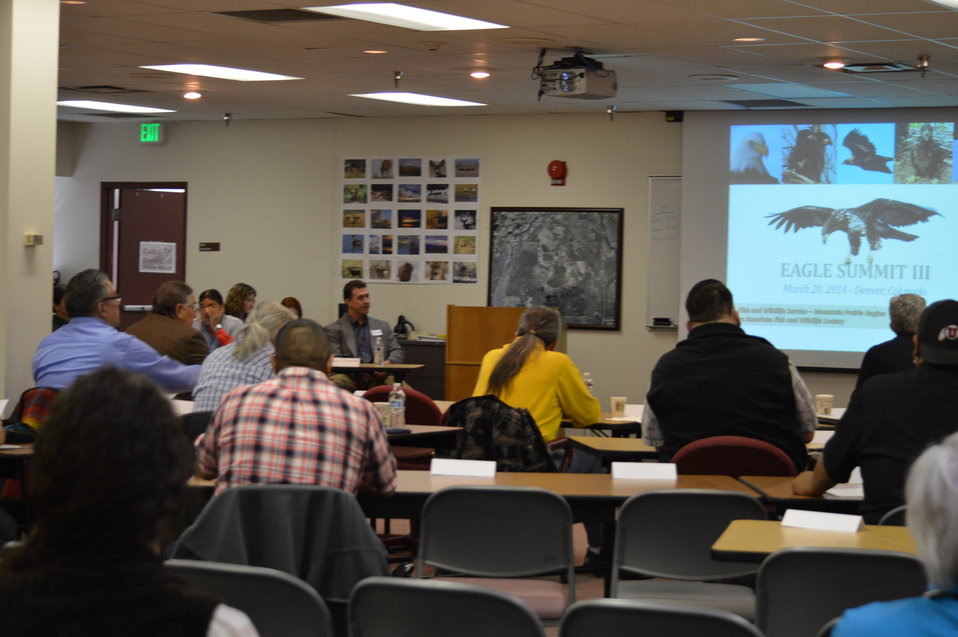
Eagle Summit III in Denver, Colorado on March 20, 2014 at the Rocky Mountain Arsenal National Wildlife Refuge.